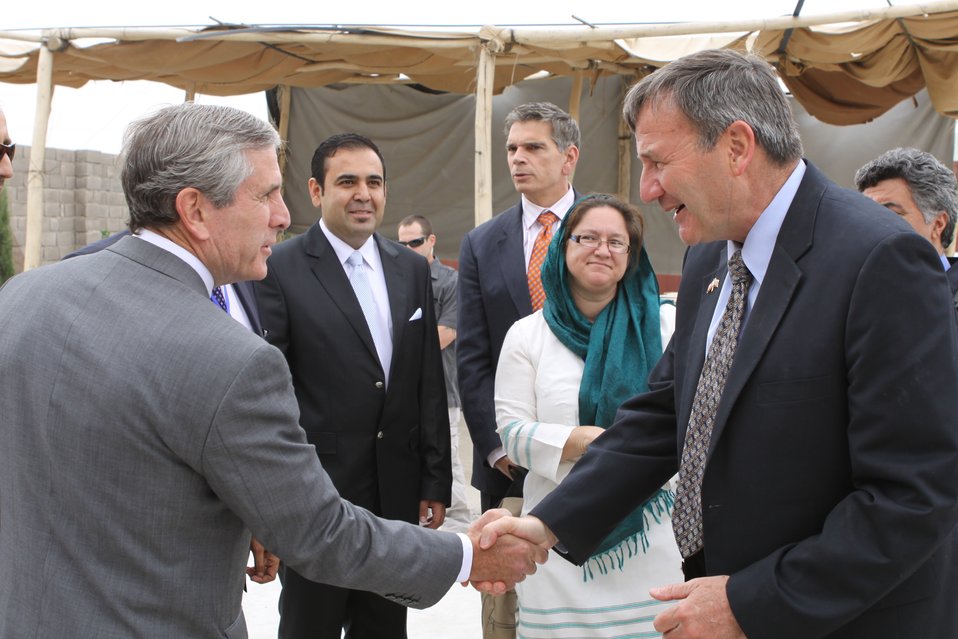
100525 Hirat Marble Conference 046